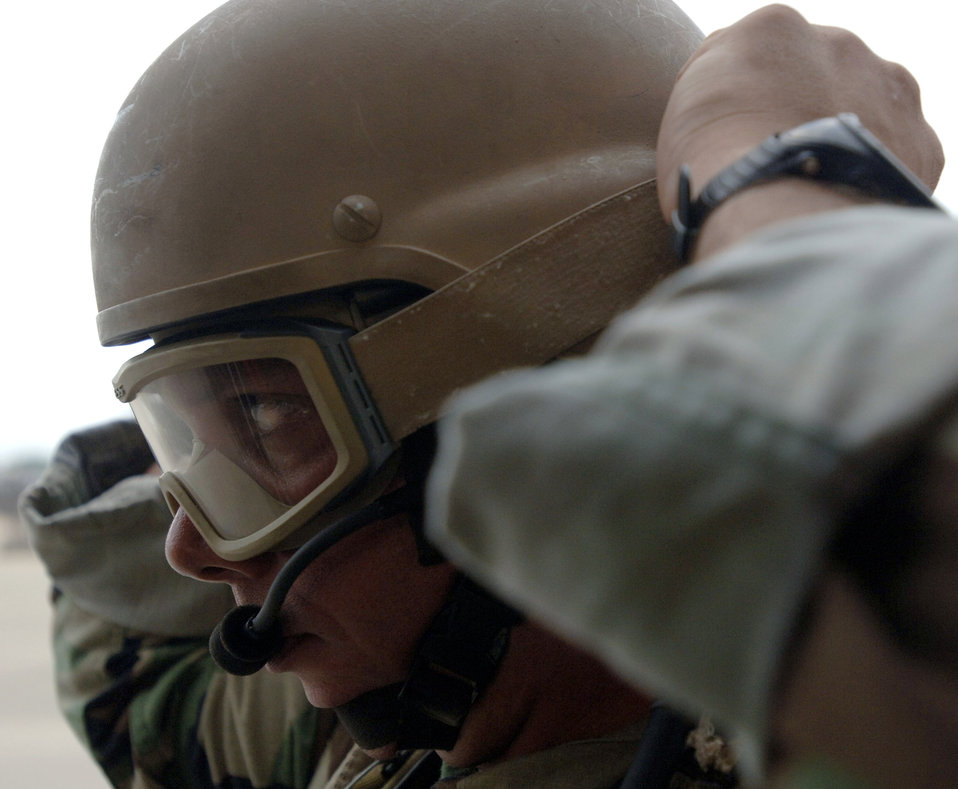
Airmen visit schools as part of Air Force Week Atlanta

Pararescuemen Master Sgt. John Shiman prepares for a simulated rescue of a downed pilot as part of an Air Force Week Atlanta event Oct. 9 at Marietta High School in Marietta, Ga. The event helped to educate students about the U.S. Air Force.